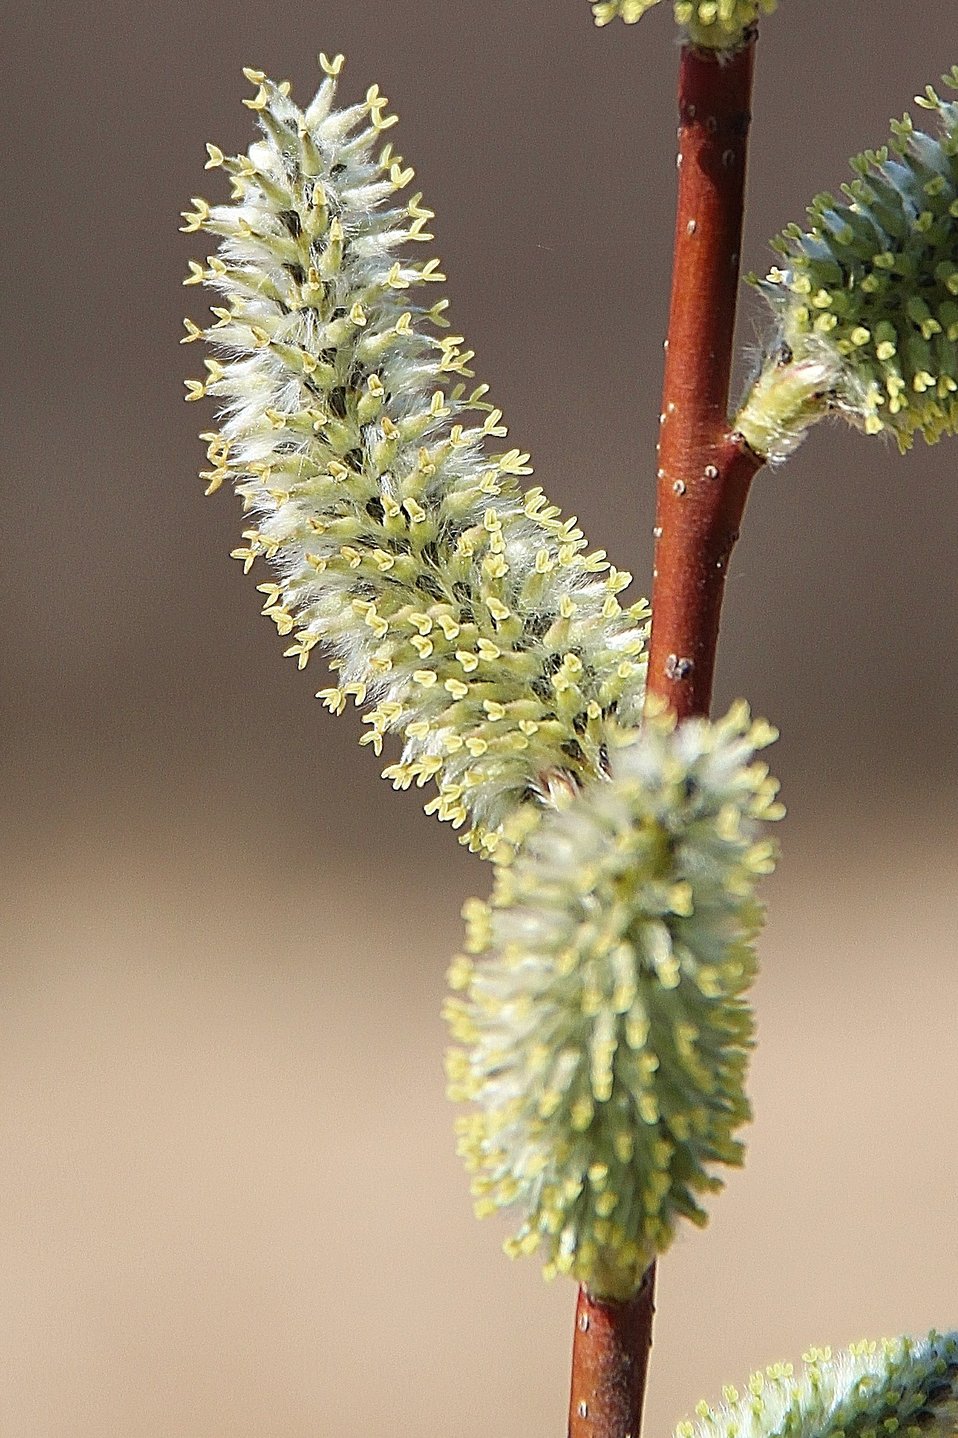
Willow flowers At Missisquoi National Wildlife Refuge